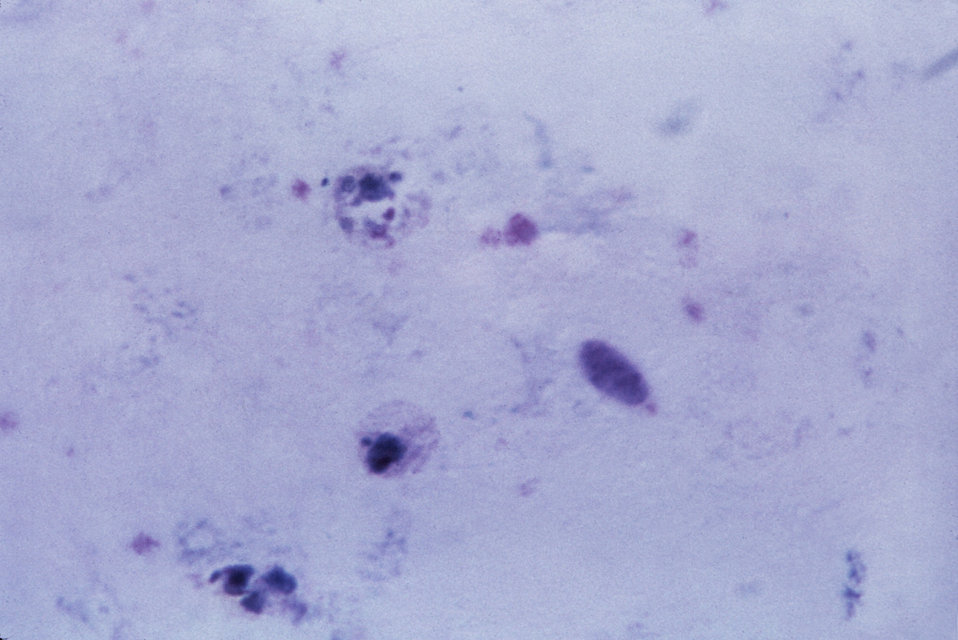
This thick film Giemsa stained micrograph shows an amoeboid, and a mature Plasmodium vivax trophozoite.